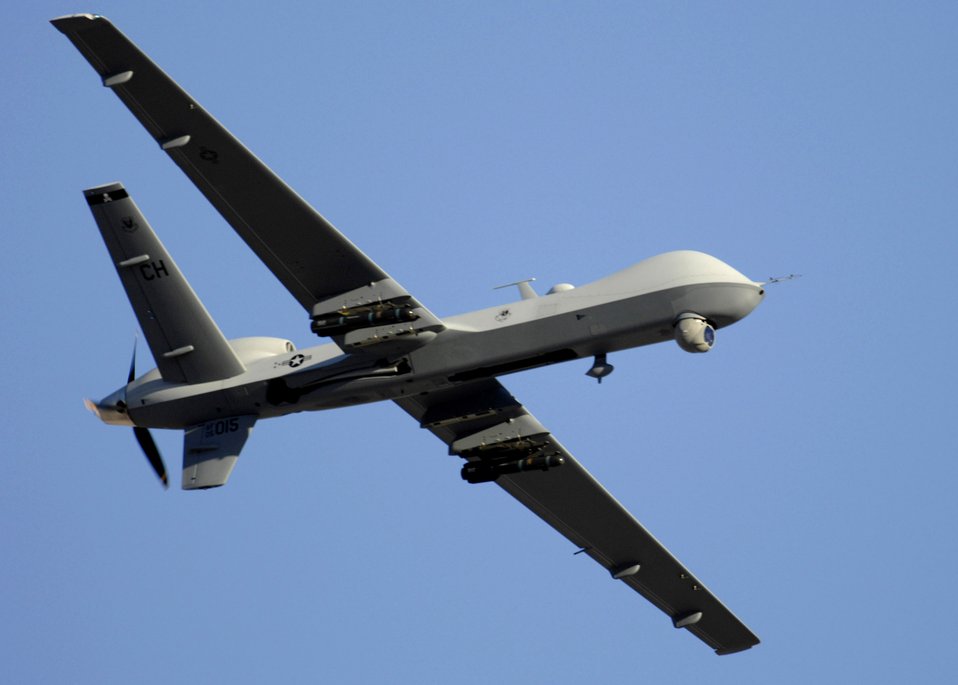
Showing off

An MQ-9 Reaper unmanned aerial vehicle flies over the crowd during the Aviation Nation Air Show at Nellis Air Force Base, Nev., Nov. 10. This year's show commemorated 60 years of airpower during the Air Force's year-long 60th anniversary celebration.